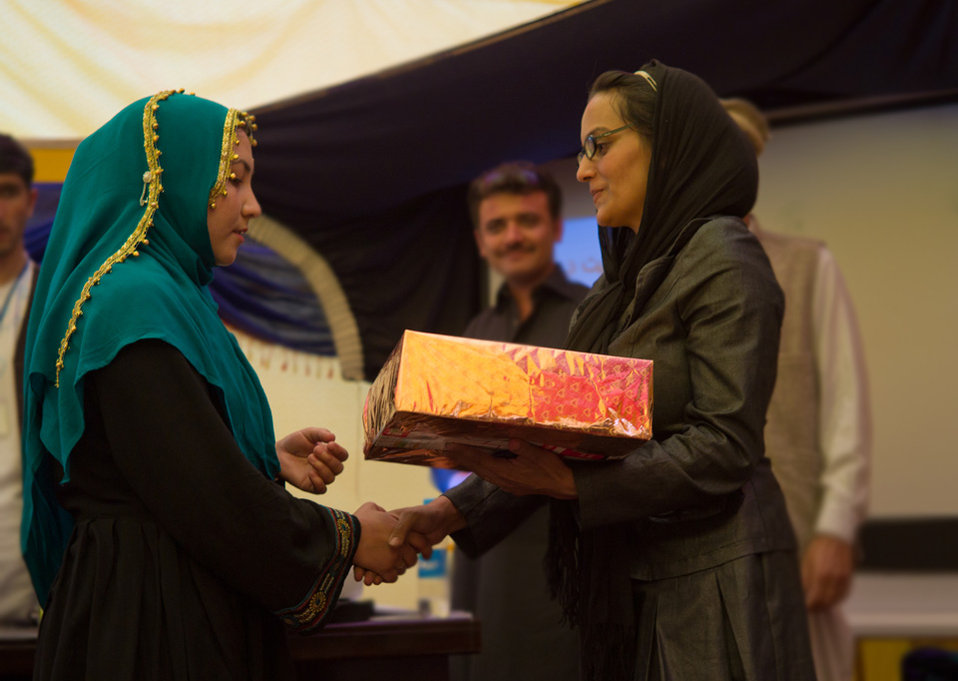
Graduation gift presentation 2